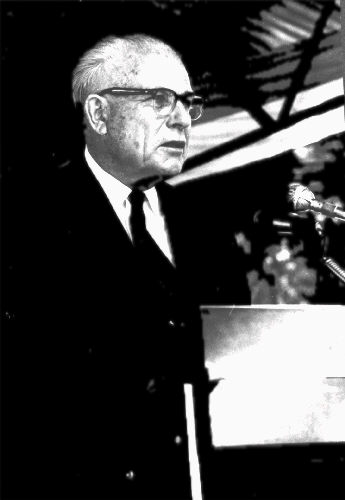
Dr. John Hannah, Adm., AID.